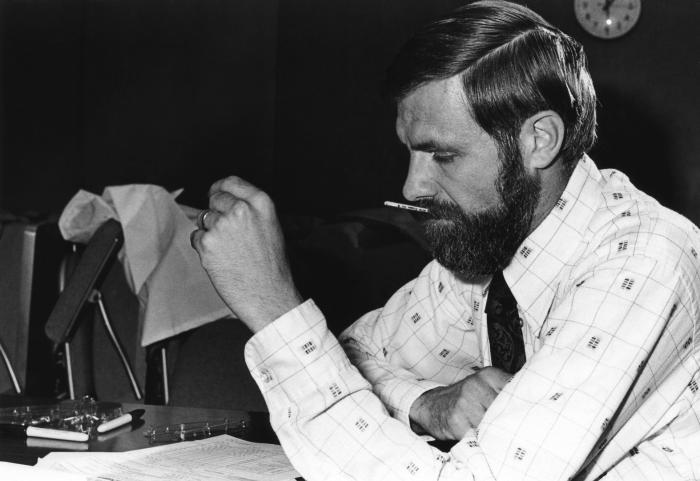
This photograph, taken at the Centers for Disease Control on May 3, 1976, showed William Foege, M.D., M.P.H., taking his temperature with an oral thermometer while participating in influenza (Swine Flu) vaccine test.